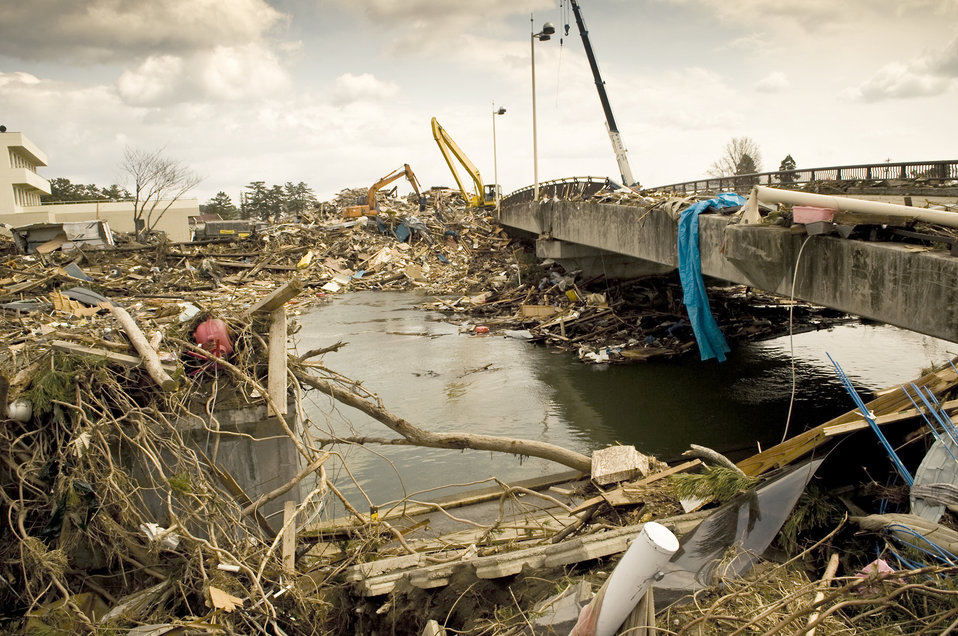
Airmen work with Japanese air controllers

The devastation can still be seen March 26, 2011, around Sendai Airport, Japan, more than two weeks after an earthquake and tsunami ravaged the region.